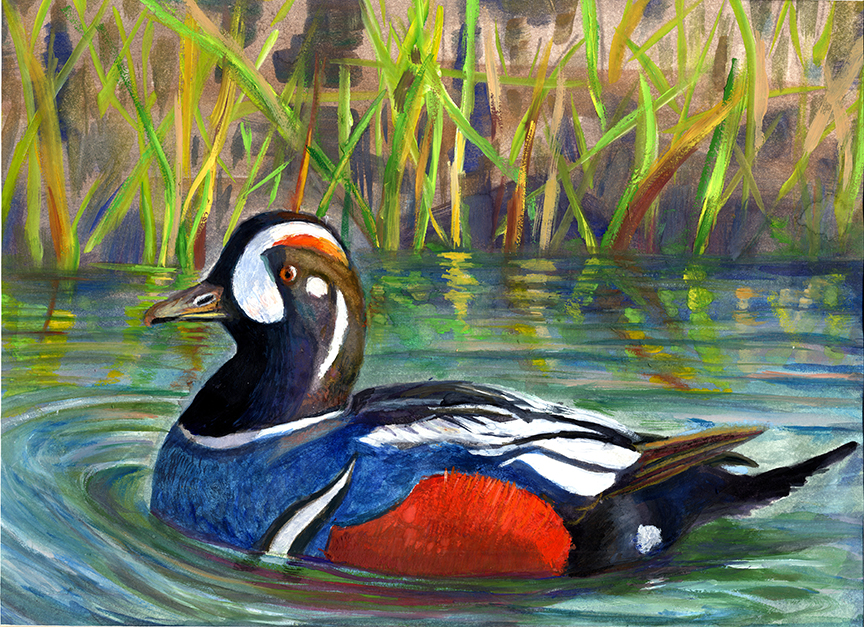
JRDuck2013DE

2013 Junior Duck Stamp Best of Show-Delaware